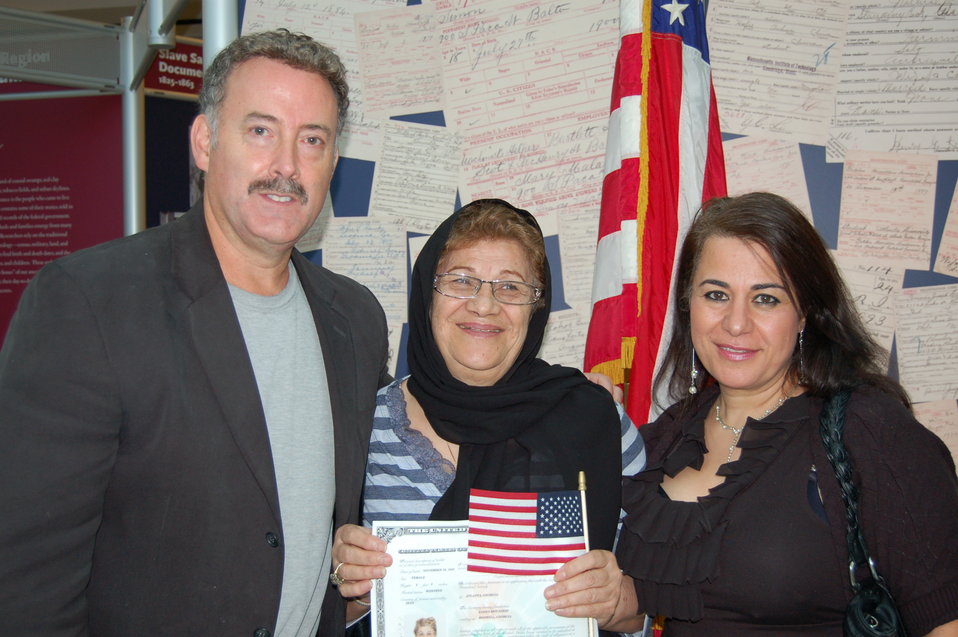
New Citizens